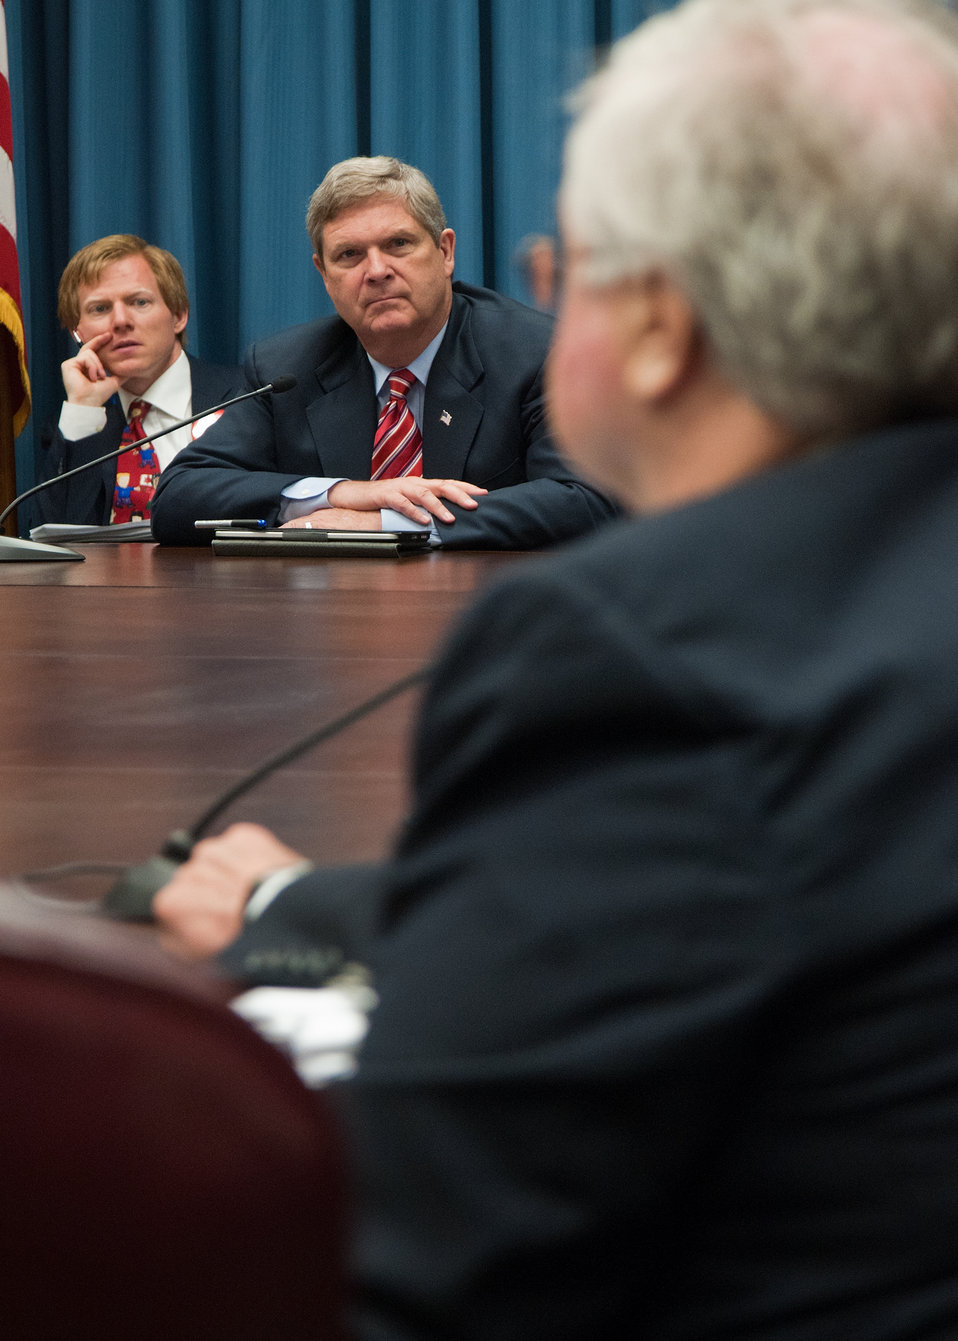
Max Finberg, Director, Center for Faith Based and Neighborhood Partnerships (left) and Agriculture Secretary Tom Vilsack (right) listen to members of international nonprofit food assistance organizations explain the successes of their programs made available under the Food for Progress and McGovern-Dole International Food for Education and Child Nutrition programs. These two international food assistance programs support global food security and sustainable agriculture production contributing significantly to President Obama’s Feed the Future Initiative. The meeting took place at the United States Department of Agriculture in Washington, DC, Tuesday, May 17, 2011.